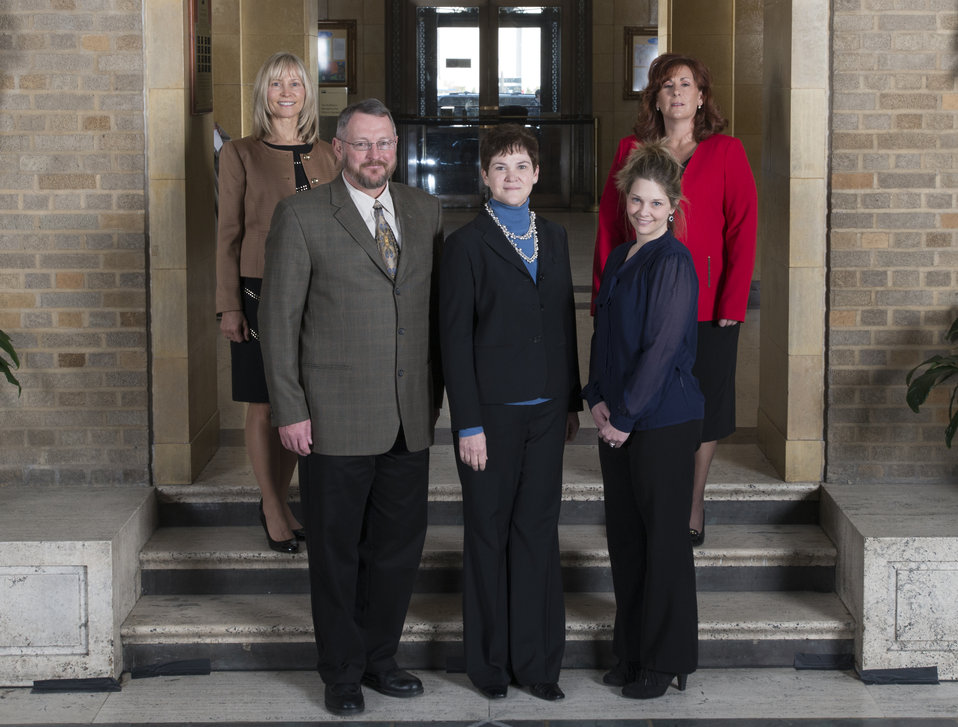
Agriculture Deputy Secretary Krysta Harden stands with the Emergency Support Function 11 Team, Animal and Plant Health Inspection Service (APHIS) from Raleigh, NC on the patio at the U.S. Department of Agriculture (USDA) in Washington, D.C. on Wednesday, Dec. 11, 2013. The team received the Secretary’s Honor Award for professional excellence, exceptional accomplishment and individual dedication during the Emergency Support Function 11 responses after Hurricanes Irene in 2011 and Sandy in 2012.